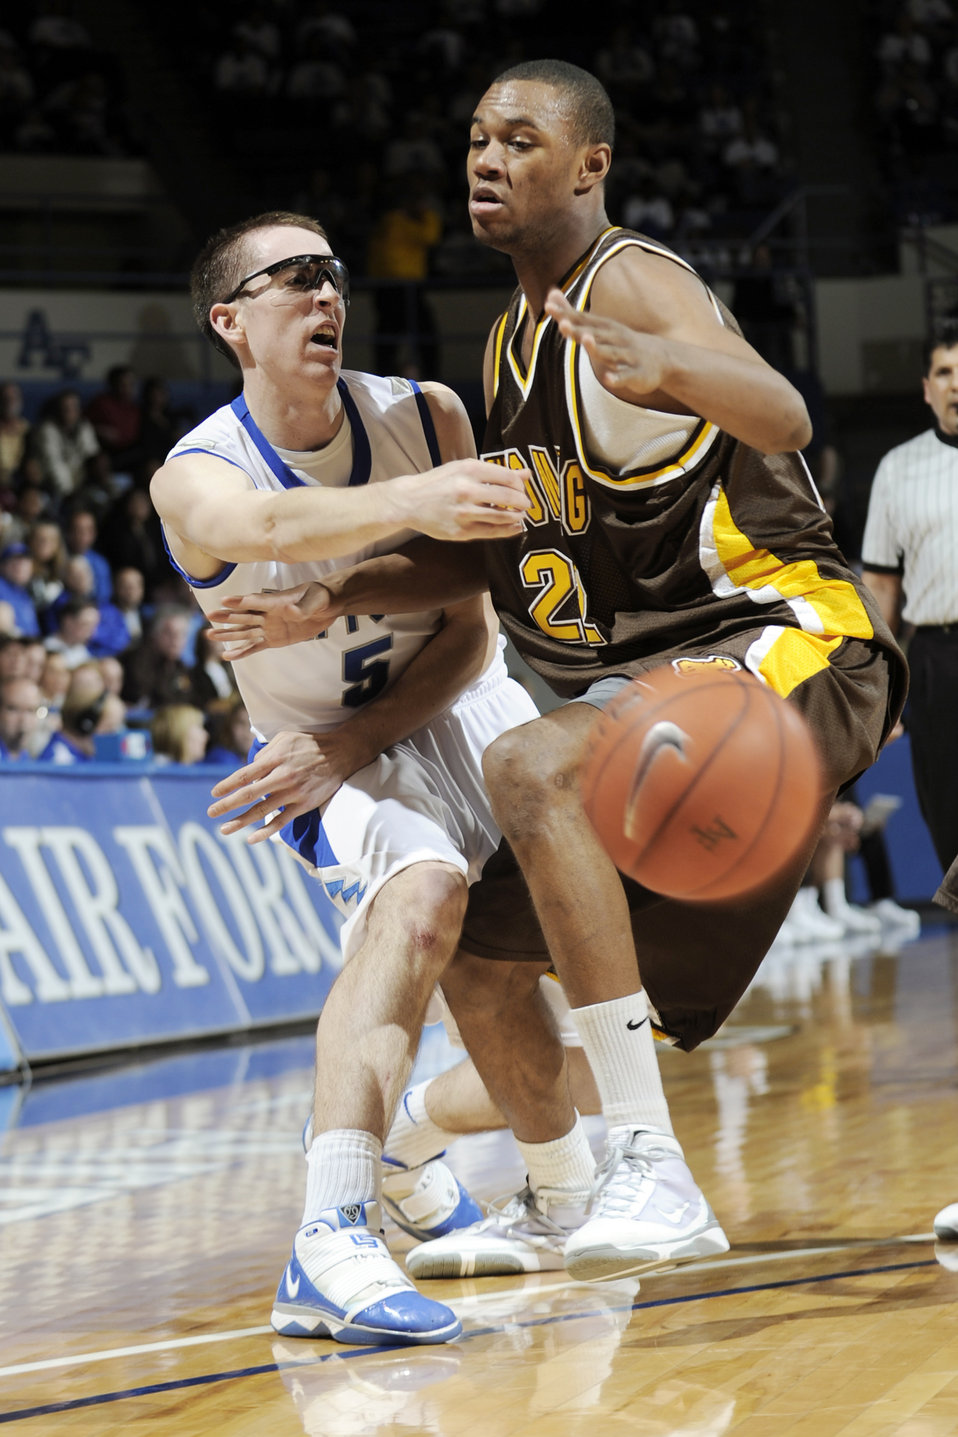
Falcons break conference streak

Falcon freshman forward Mike Fitzgerald passes the ball around Cowboy Amath M'Baye during the game against Wyoming at the U.S. Air Force Academy's Clune Arena in Colorado Jan. 30, 2010. The Falcons won 70-63. This win broke a 22-game conference losing streak; their first win in the Mountain West Conference since 2008.